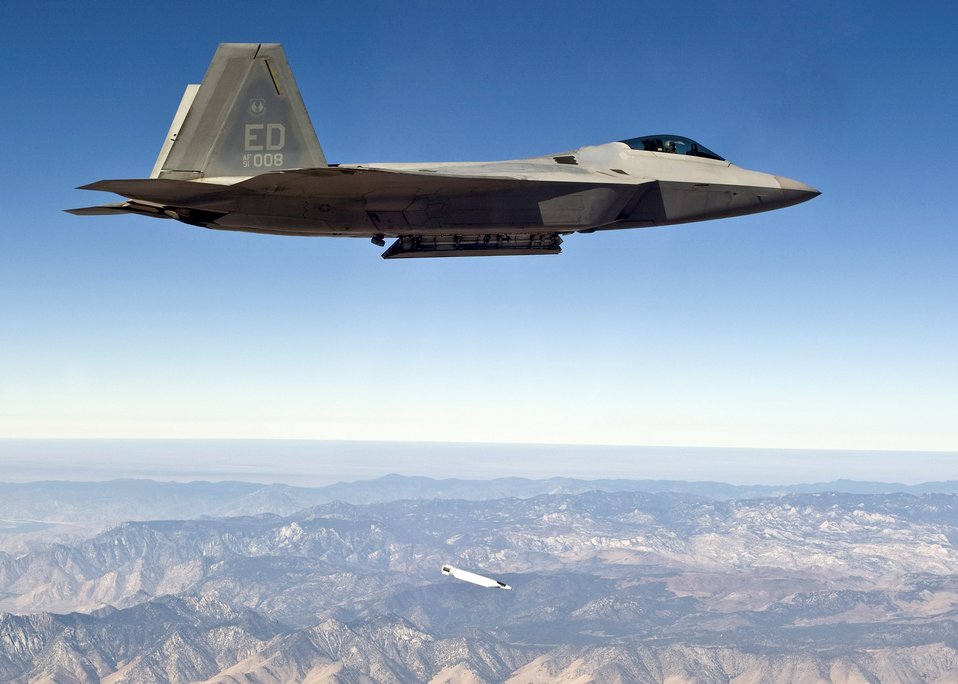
F-22 performs first drop of small diameter bomb

An F-22 Raptor drops a small diameter bomb from its weapons bay during a test mission Sept. 5 over Edwards Air Force Base, Calif. The test marks the first airborne separation of a small diameter bomb from the internal weapons bay of an F-22.